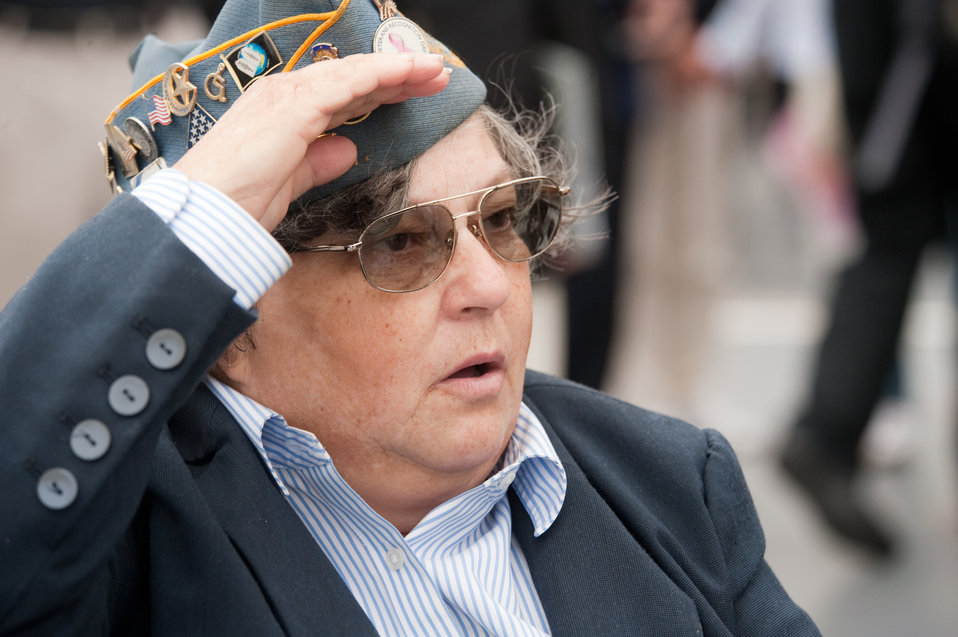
Air Force Week New York City Proclamation Ceremony

Helene Van Clief salutes during the playing of the national anthem for the Air Force Week New York City proclamation ceremony at the USS Intrepid on Aug. 24, 2010. Ms. Van Clief of New York City, was an Army Staff Sergeant stationed in Europe. The event at the Intrepid Sea, Air & Space Museum was highlighted by a six-ship flyover by the USAF Thunderbirds. The Honorable Michael Donley, Secretary of the Air Force attended, along with General Raymond Johns, Commander of Air Mobility Command. The Police Commissioner of the City of New York, the Honorable Raymond Kelly, represented NYC. Mr. Greg Kelly of